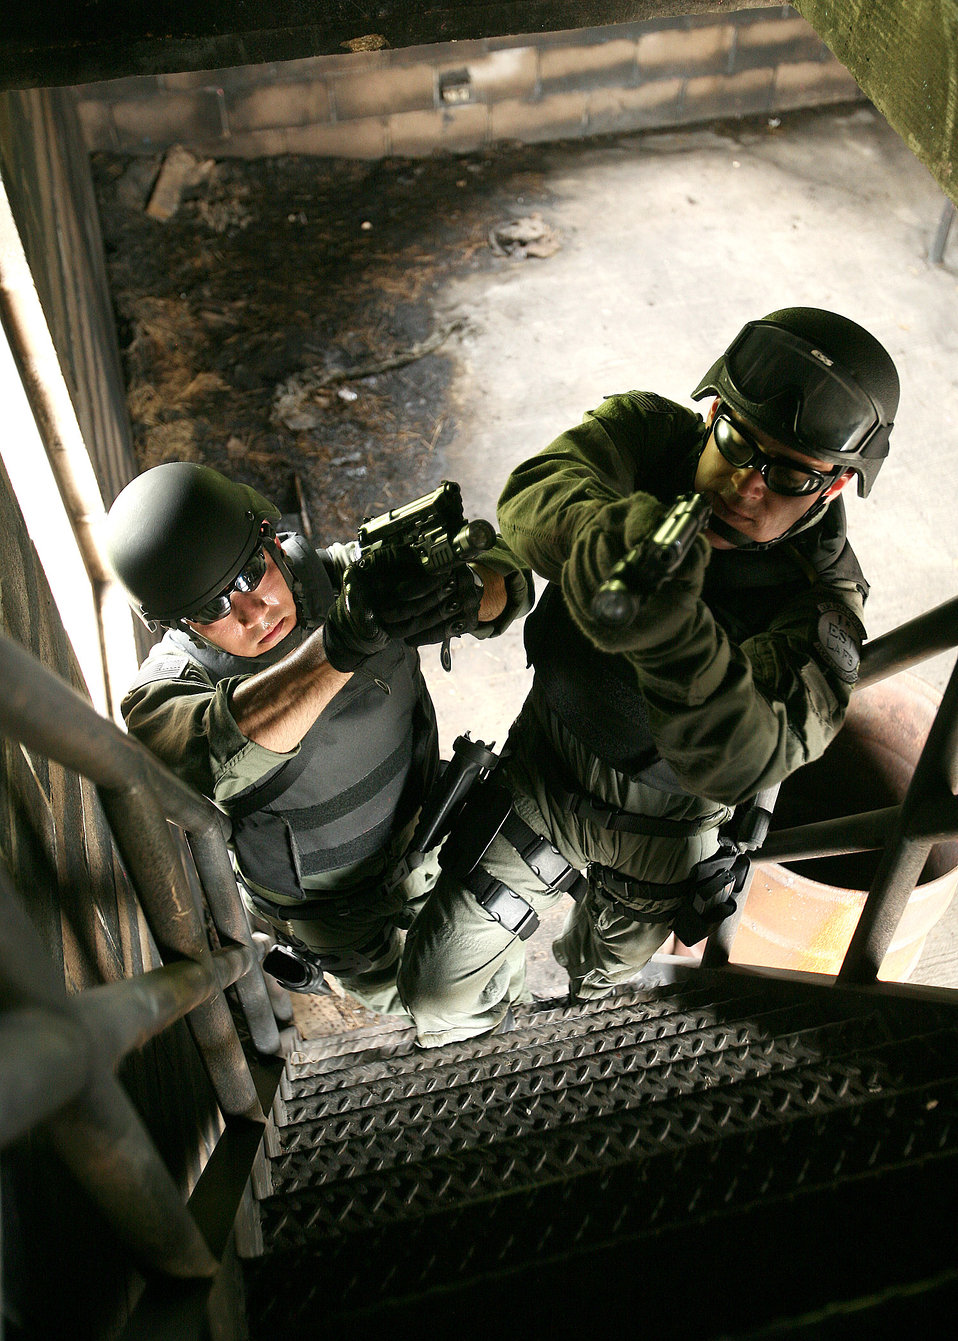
Go ahead, make my day

Staff Sgt. Bryan Garcia (left) and Master Sgt. Ronald Thompson cover each other as they make their way up a flight of stairs to the attic to clear a target building during a training session May 4 at Lackland Air Force Base, Texas. Sergeants Garcia and Thompson are members of the 37th Training Wing's Emergency Services Team at Lackland AFB, who competed in the Southeast Texas SWAT competition April 24 and took a first.